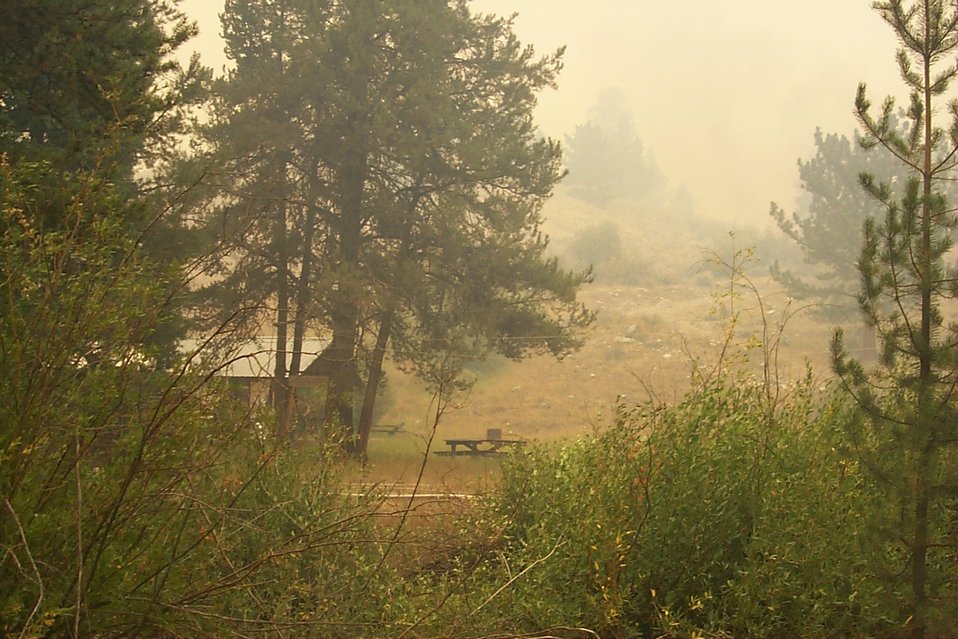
Urban interface Fire Clearwater Fire Salmon Field Office USRD Upper Snake River District